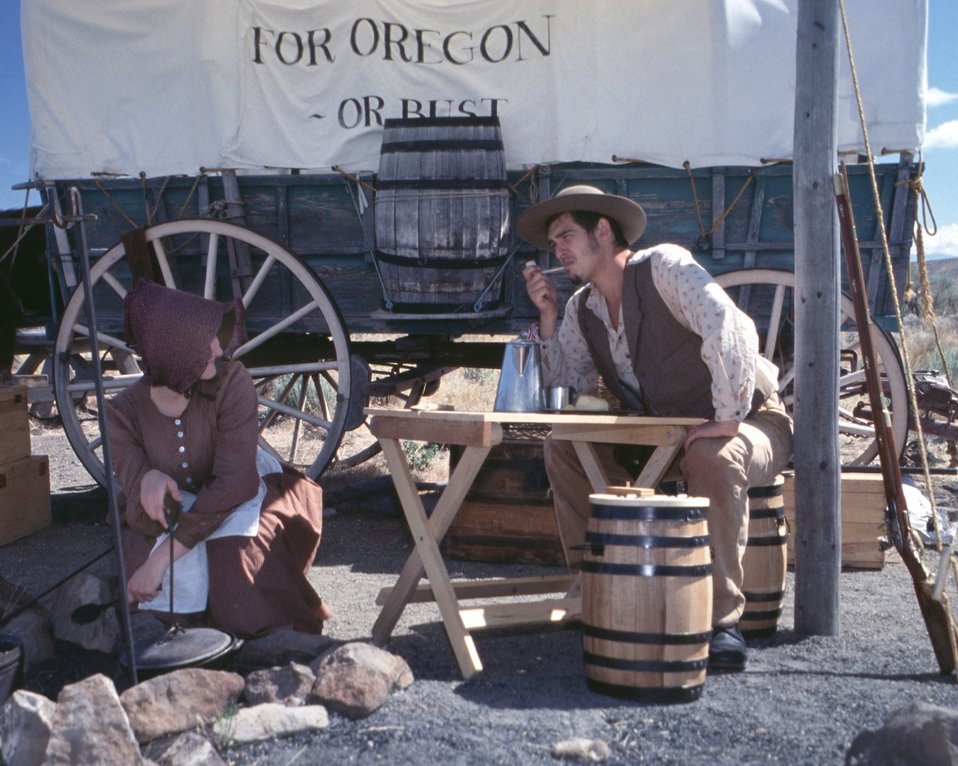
Rebecca Crow and Brandon Kames portray a pioneer couple at a wagon encampment.